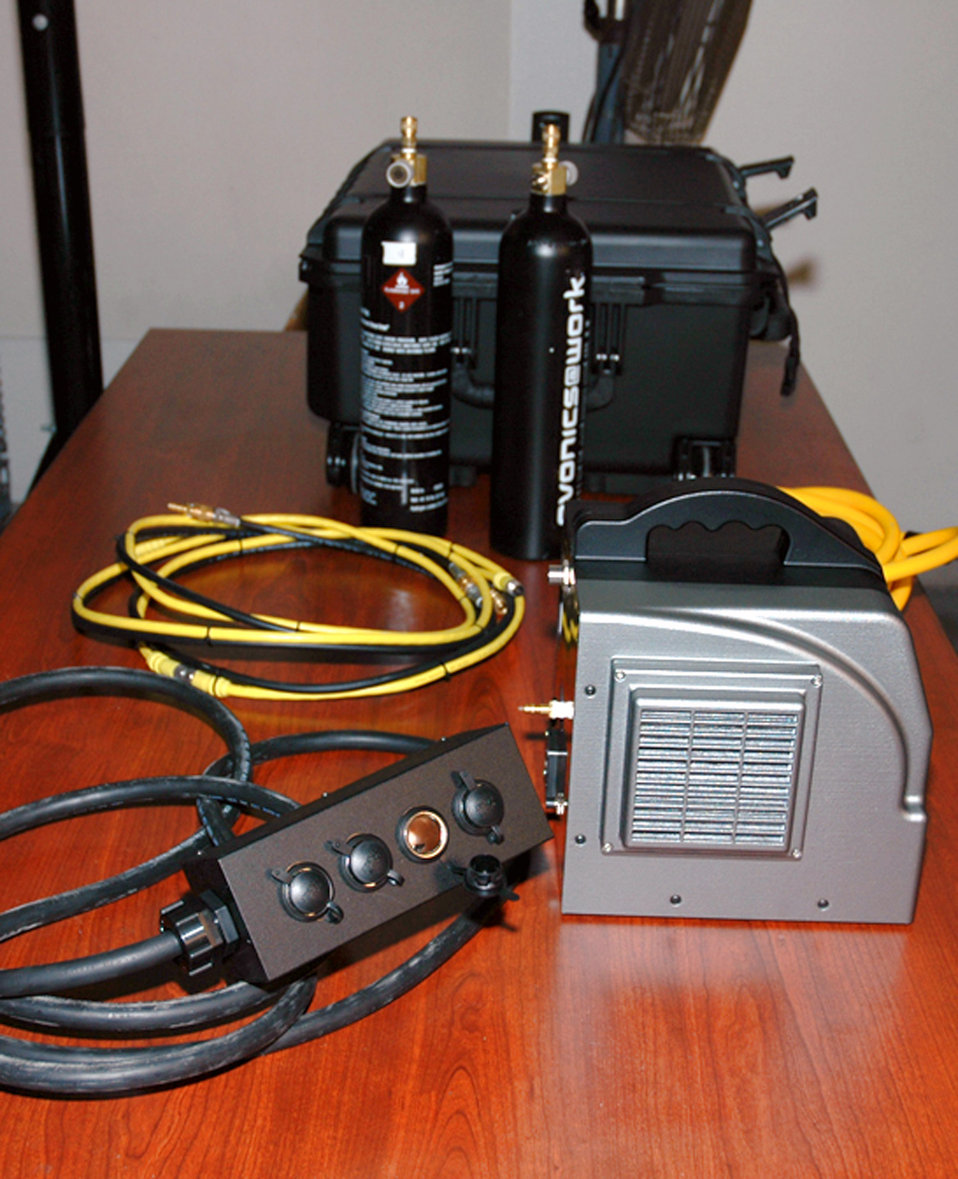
Portable electronic power initiative energizes possibilities

The Jadoo portable electronic power system was used with aeromedical power equipment as part of an Air Mobility Battlelab demonstration in February at Scott Air Force Base, Ill. The demonstration was for the battlelab's Portable Electronic Power Supply for Aeromedical Evacuations initiative. The demonstration proved successful and the Air Mobility Battlelab, located in the Air Force Expeditionary Center at Fort Dix, N.J., has recommended it to Air Mobility Command for use.